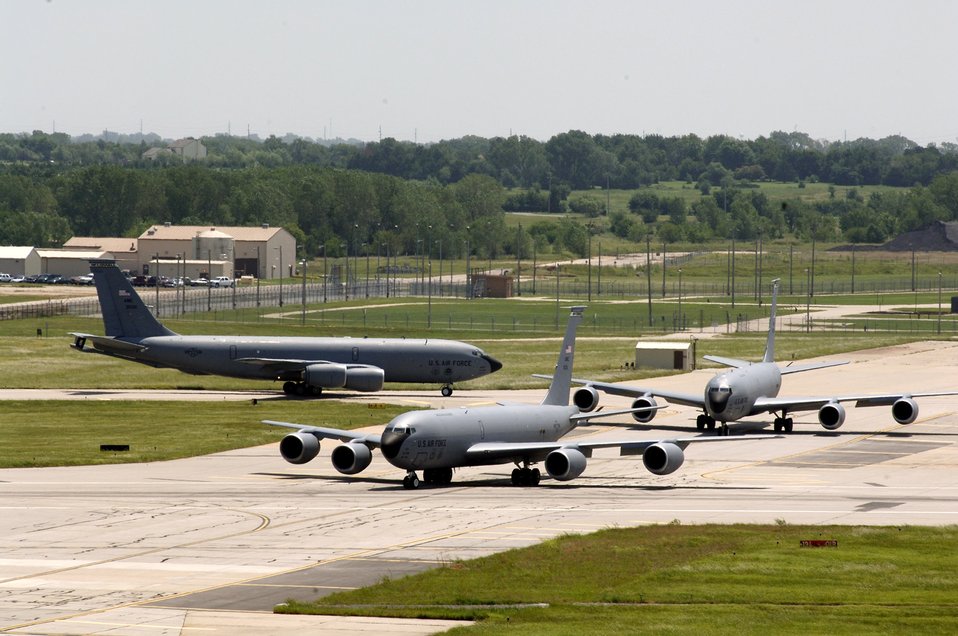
Elephant walk

KC-135 Stratotankers turn onto a taxiway to form the elephant walk formation during a generation exercise Aug. 5 at McConnell Air Force Base, Kan. The exercise showcased McConnell AFB aircrews' capability to prepare a flight and take off within minutes of being notified of a mission.